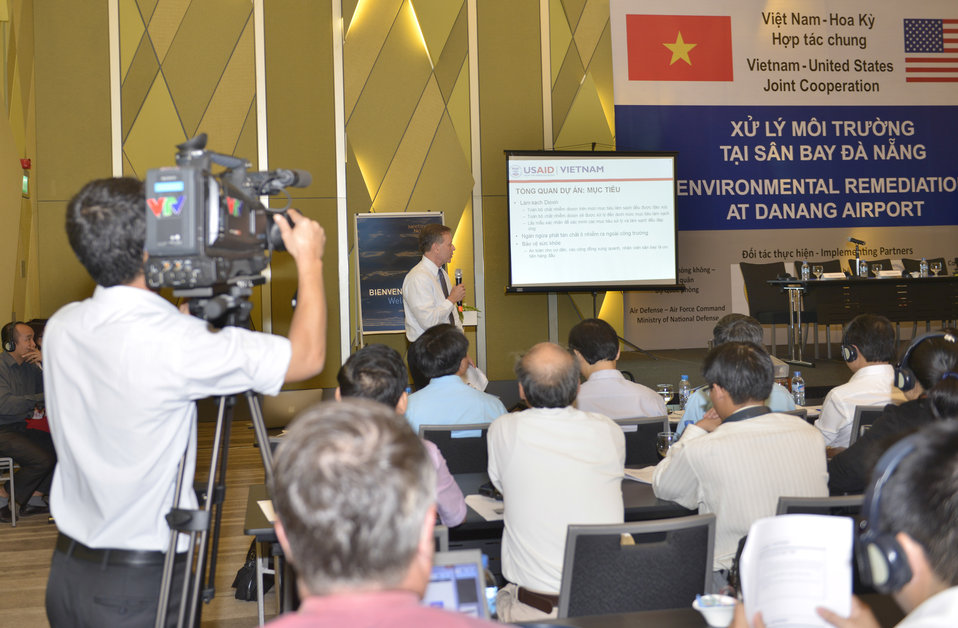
Community Outreach Session on Environmental Remediation of Dioxin Contamination at Danang Airport Project

Danang, March 25, 2014.